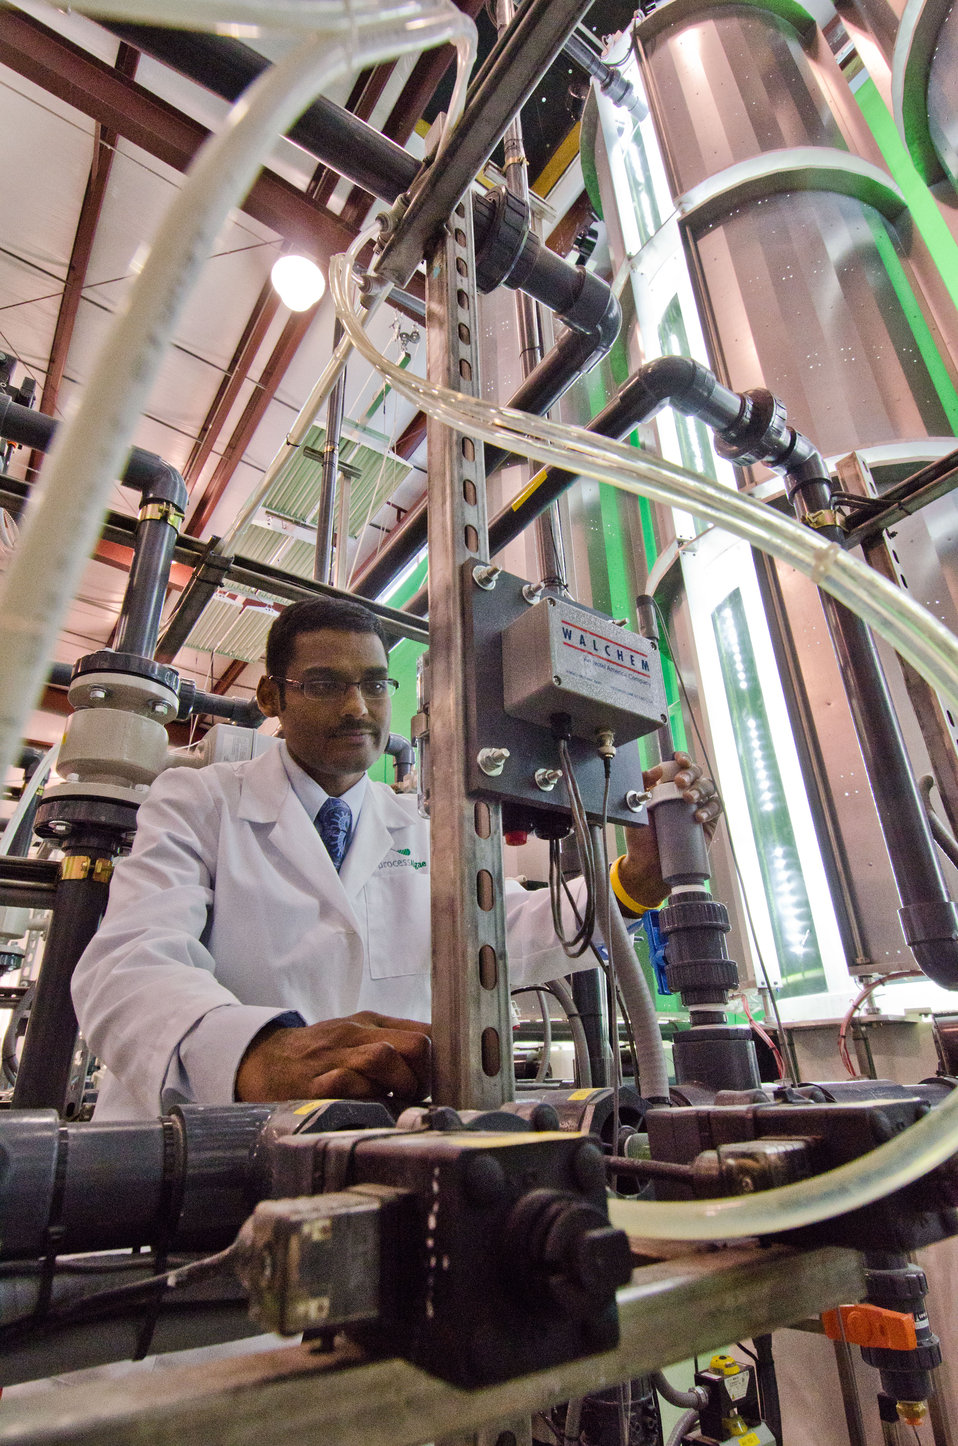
BioProcess Algae Field Engineer Thiruvenkadam Viswanathan at the BioProcess Algae facility of the Green Plains Renewable Energy (GPRE), Inc. (GPRE) checks a control and monitor system on Friday, Apil 15, 2011. This operation is co-located within GPRE’s ethanol factory where BioProcess Algae technology is used to treat waste products, carbon dioxide, recycled heat and water to mass-produce algae. Algae from this facility are used for animal feeds, pharmaceutical and beauty products.